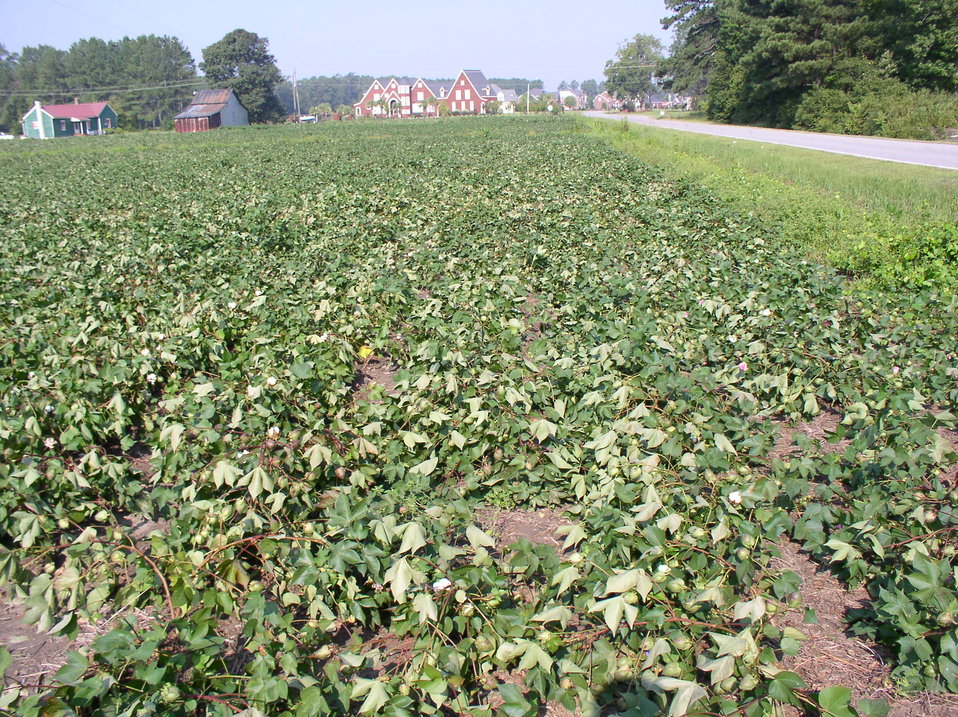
Crop damage to cotton fields from Hurricane Irene in Wayne County, NC, on Monday, August 29, 2011.